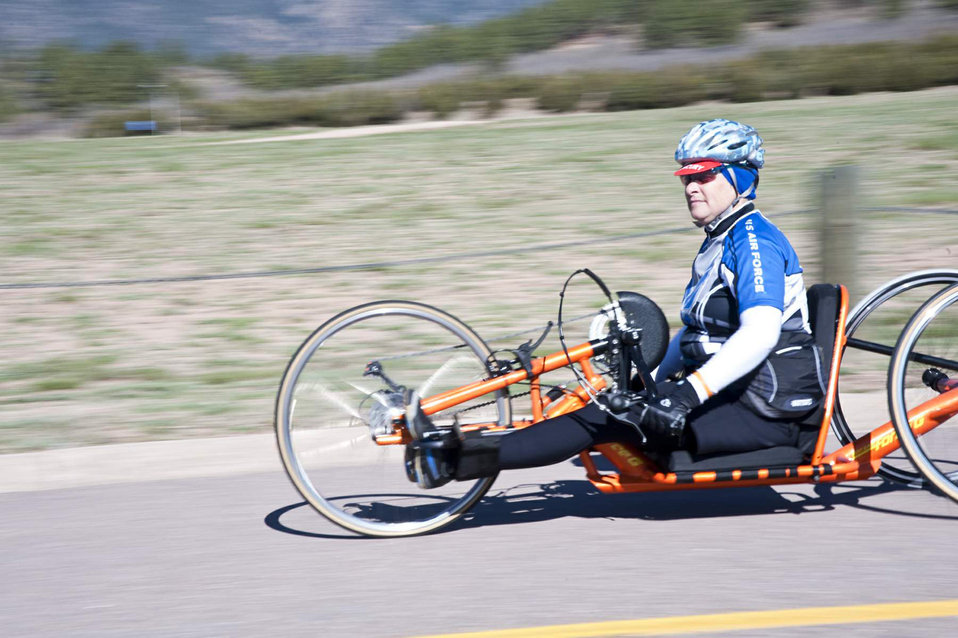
Warrior Games cycling